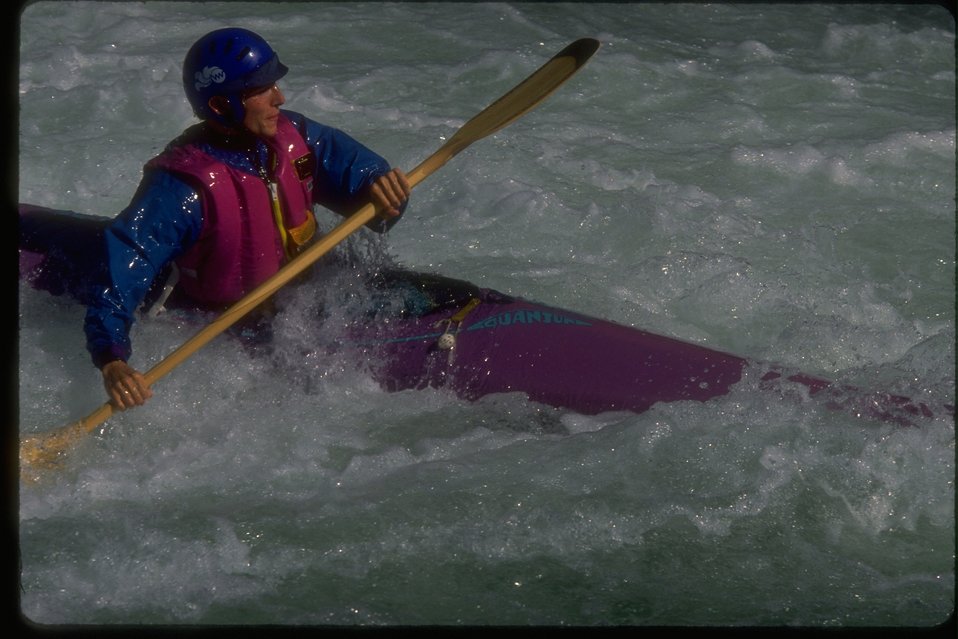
Kayaking in the North Umpqua River.